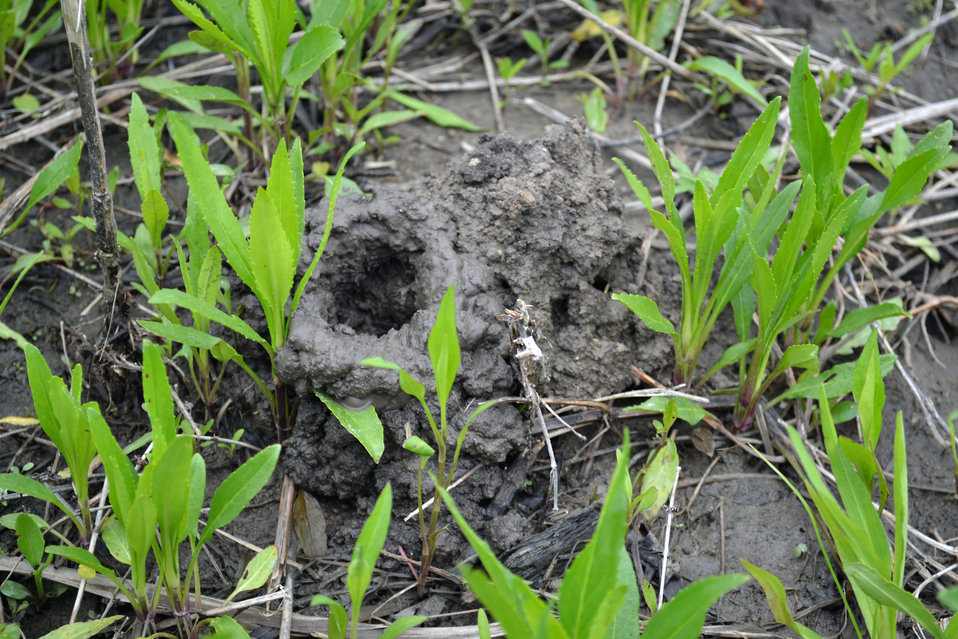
Crayfish Cast

Terrestrial crayfish dig down to the water table in wet prairie habitats and leave castings on the surface.